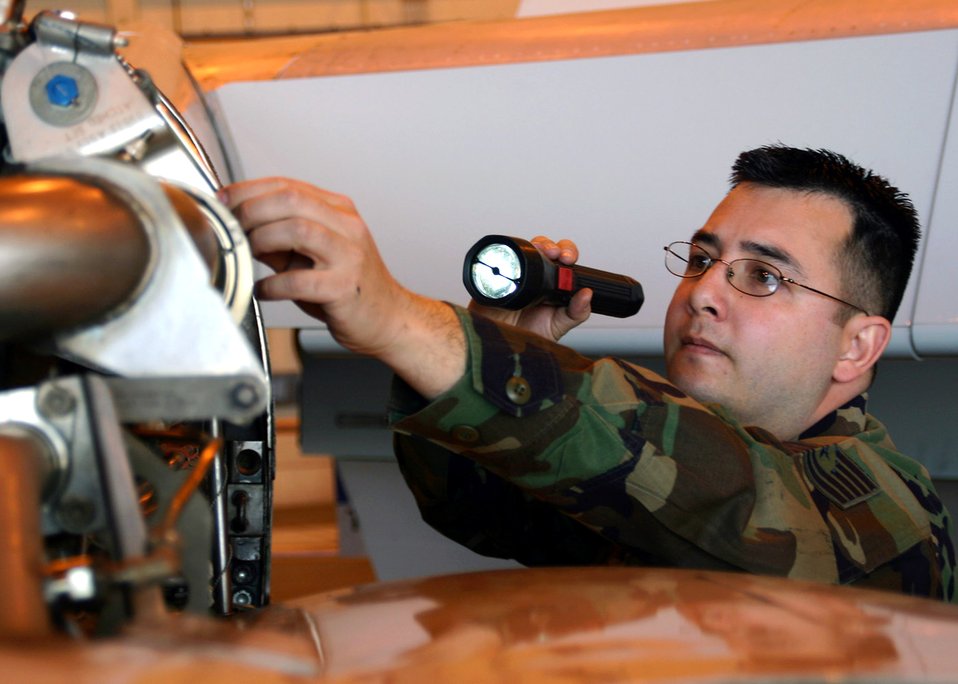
Maintainers save man-hours with AFSO 21 changes

Tech. Sgt. Roy Wiggen takes a look at an E-3 Sentry as it has its annual isochronal inspection April 4 at Tinker Air Force Base, Okla. Inspections were done every 180 days, but through Air Force Smart Operations for the 21st century processes the inspections were changed to once a year, saving the Air Force time and money, and allowing theater commanders more use of the E-3. Sergeant Wiggen is assigned to the 552nd Maintenance Group Quality Assurance Division.